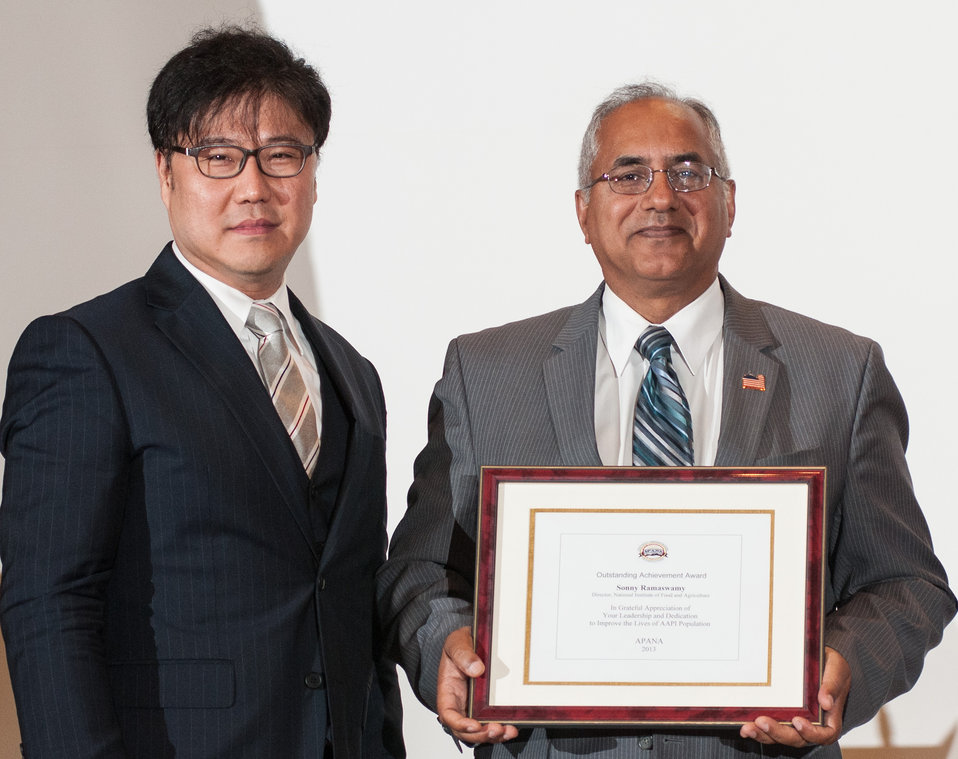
Asian Pacific American Network in Agriculture (APANA) President Justin Rhee presents an “Outstanding Achievement Award” for leadership and dedication to improve the lives of the Asian Americans and Pacific Islander (AAPI) population, to U.S. Department of Agriculture’s (USDA) Muquarrab Qureshi, who is accepting for National Institute of Food and Agriculture (NIFA) Director Dr. Sonny Ramaswamy, during the USDA Asian Pacific American Heritage Month Observance, at the USDA headquarters in Washington, D.C., on Thursday, May 23, 2013. NIFA created an agency-wide committee to support the AAPI population. This year’s theme is “Building leadership; Embracing the Cultural Values and Inclusions.”